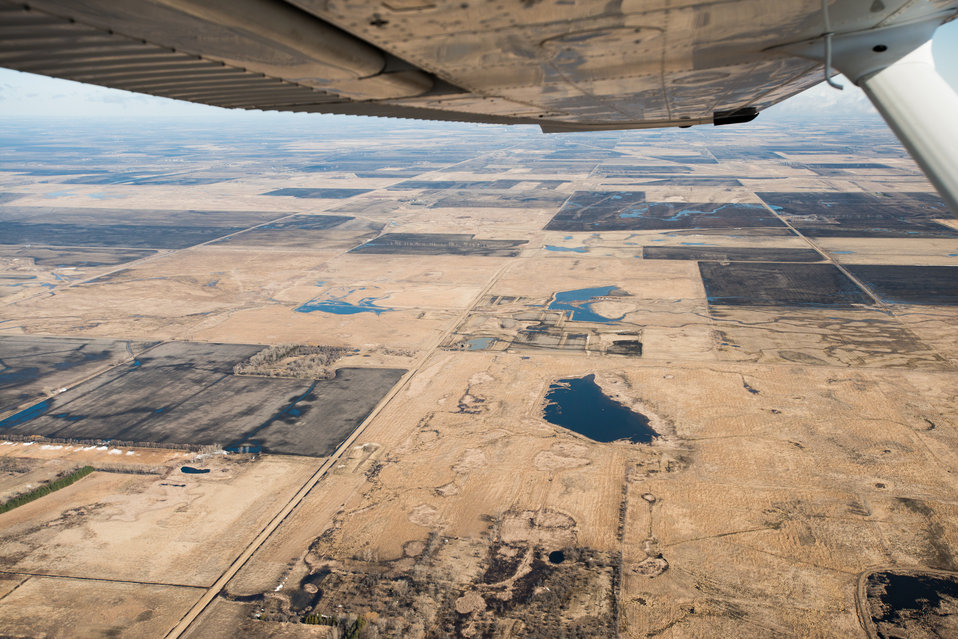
Ehlert North U.S. Department of Agriculture (USDA) Natural Resources Conservation Service (NRCS) Wetland Reserve Program (WRP) in Wilkin County, MN, on Tuesday, April 30, 2013. For information about this and other programs from the USDA Red River Basin Initiative (RRBI) please see www.mn.nrcs.usda.gov/news/features13/RRBI.html.